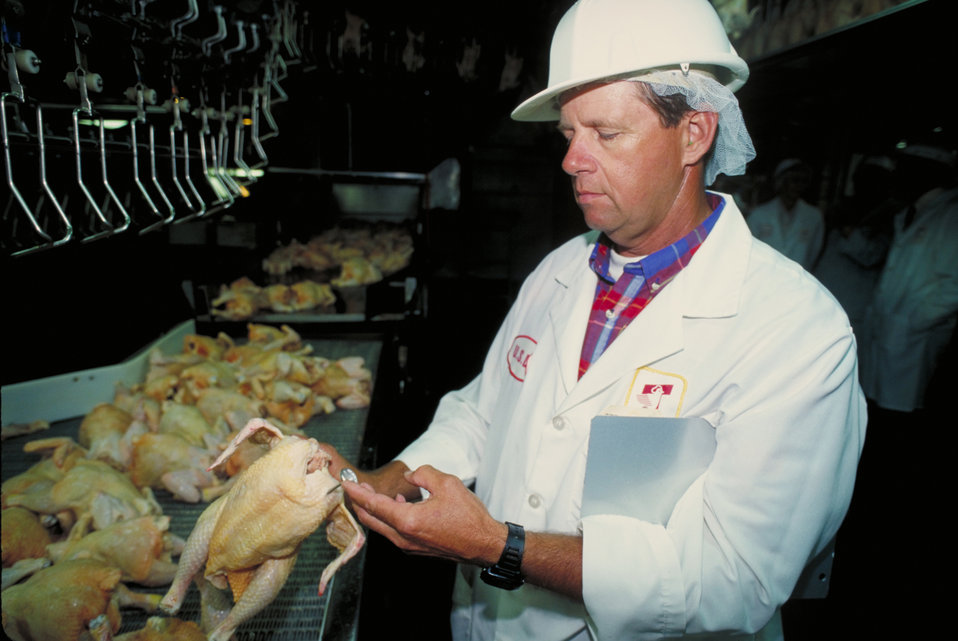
U.S. Department of Agriculture (USDA) Food Safety Inspection Service (FSIS) inspector checks the temperature of chicken carcasses at various control points to compare them with those measured and recorded by the plant to prevent multiplication of pathogenic bacteria in compliance with Hazard Analysis and Critical Control Points (HACCP) issued by FSIS on June 15, 1995. USDA photo Lester Shepherd.